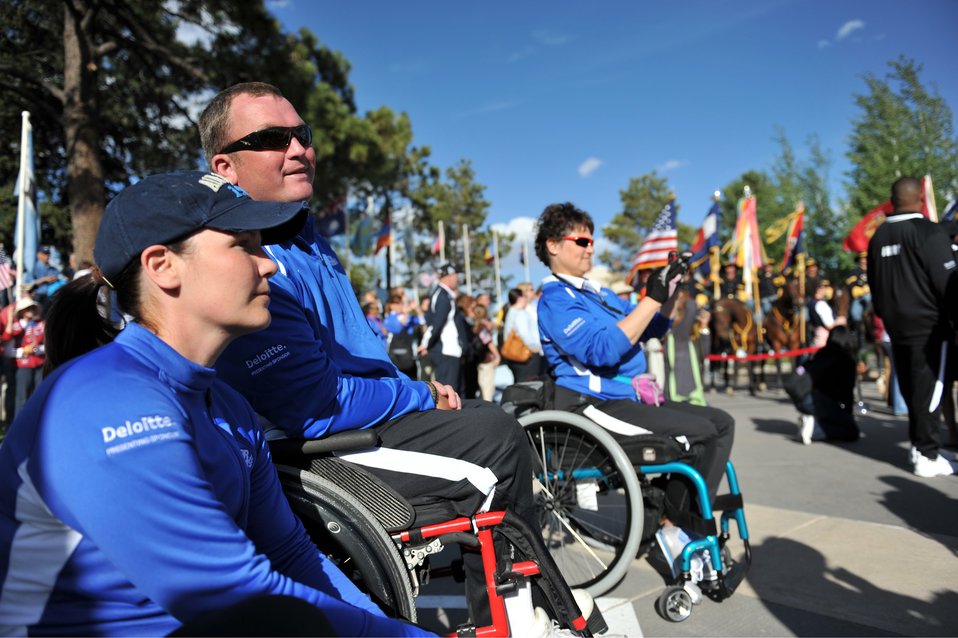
Warrior Games

Air Force team members Stacy Pearsall, Staff Sgt. Richard Pollock II and retired Staff Sgt. Jeannie Goldy-Sanitate attend the opening ceremony of the inaugural Warrior Games May 10, 2010, at the Olympic Training Center in Colorado Springs, Colo. Teams from the Air Force, Army, Navy, Marines and Coast Guard are participating in the inaugural Warrior Games which begin May 10 and finish May 14.